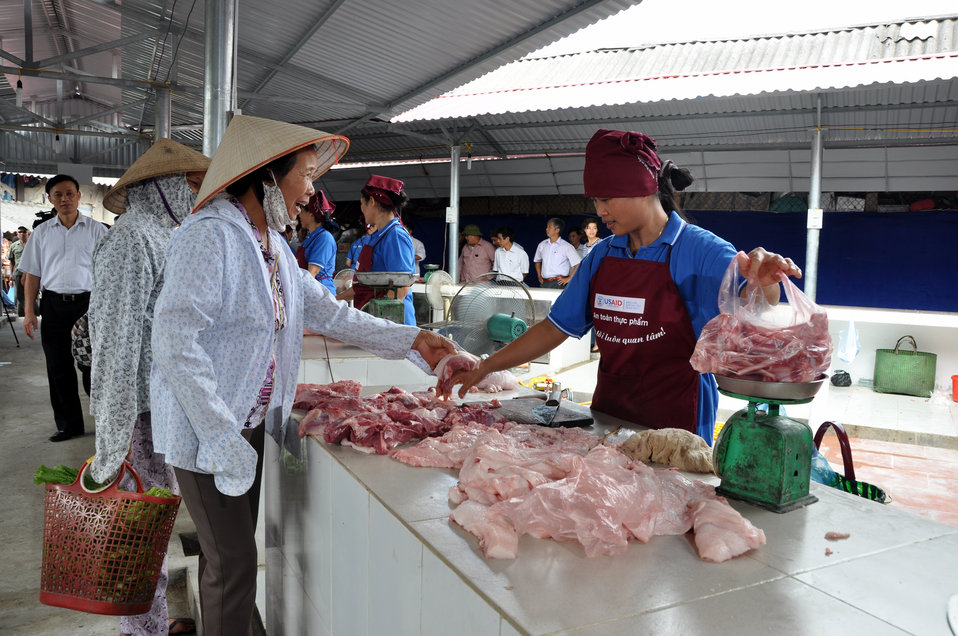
Handover Ceremony Hoa Mac Market Ha Nam

October 26, 2012